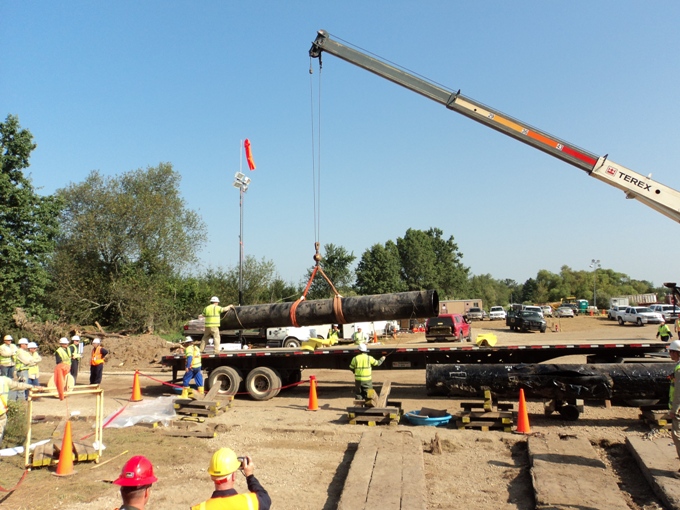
Loading pipe - Enbridge Oil Spill pipeline

Crews load section of pipe that will be examined by investigators after the Enbridge pipeline oil spill near Marshall, Michigan.